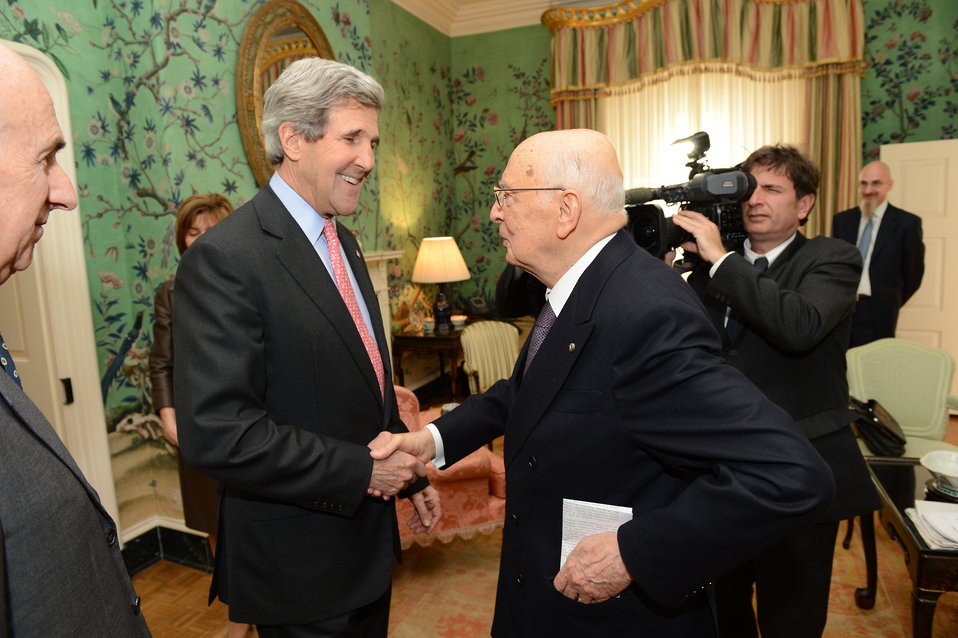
Secretary Kerry Shakes Hands With Italian President Napolitano

U.S. Secretary of State John Kerry shakes hands with Italian President Giorgio Napolitano at the Blair House in Washington, D.C., February 15, 2013.